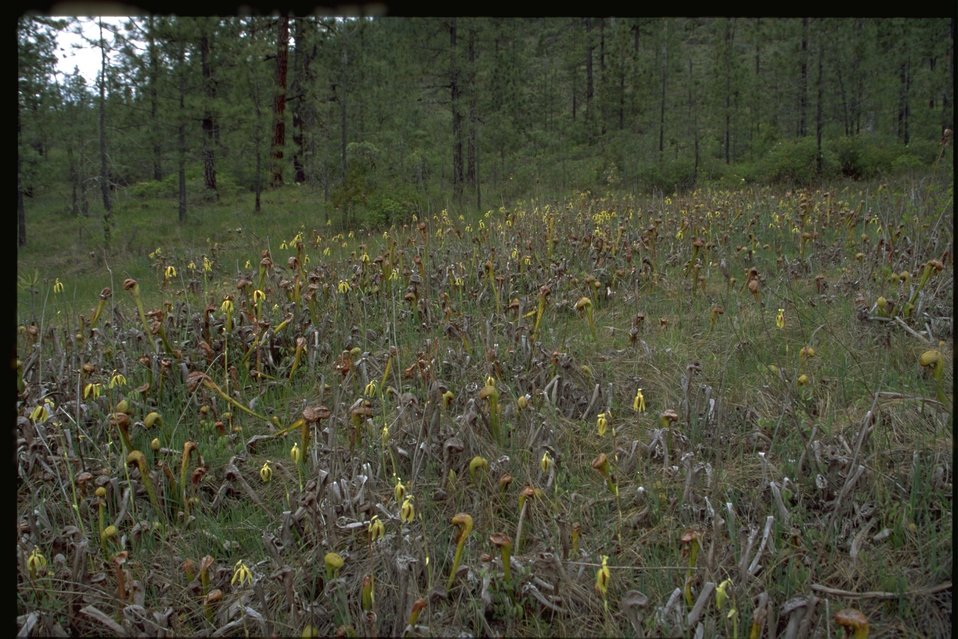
Farshot of Darlingtonia fen.